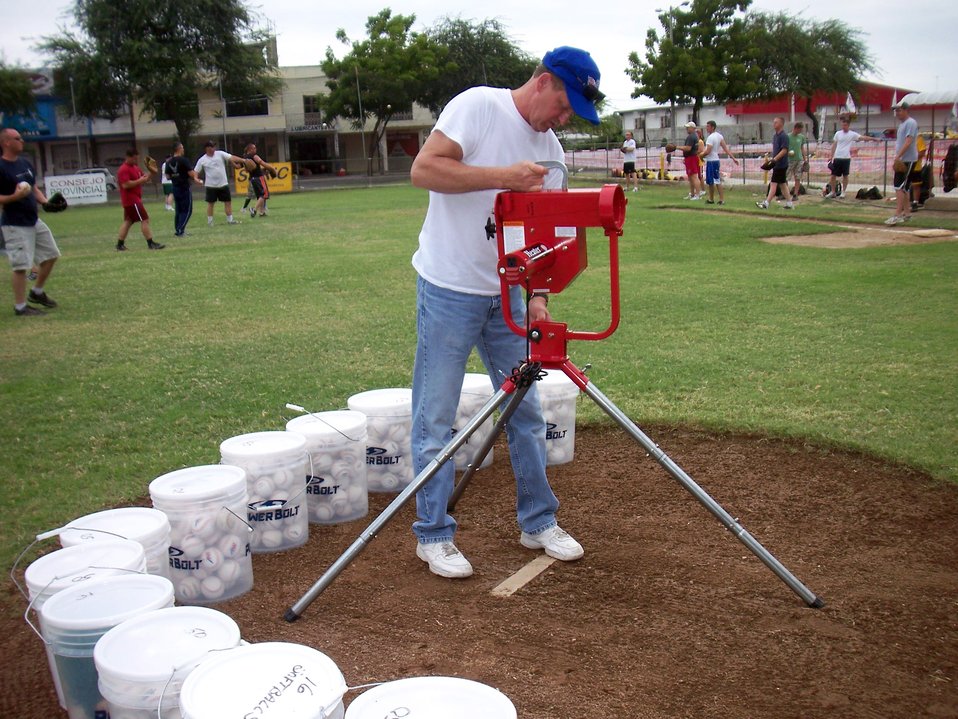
Airmen in Ecuador have a ball serving local community

Senior Master Sgt. Tom Hren assembles a pitching machine that was donated to the Manta Baseball Academy in May in Ecuador. Sergeant Hren is assigned to the 190th Air Refueling Wing, which is deployed as part of the 478th Expeditionary Operations Squadron at Manta Forward Operation Location.